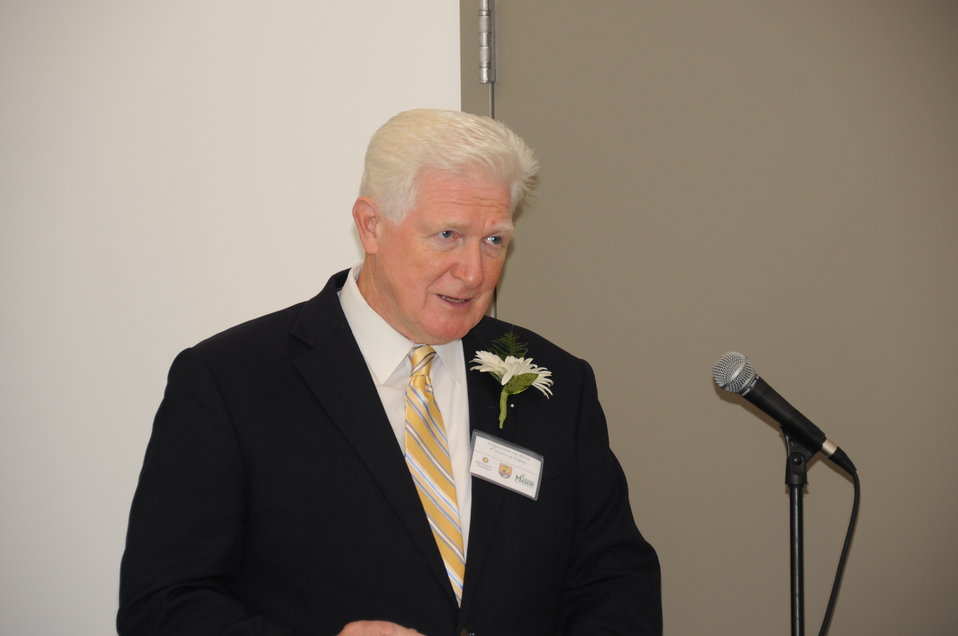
Together in Conservation

Memorandum of Understanding Signing Ceremony with U.S. Fish and Wildlife Service, Smithsonian Institution, and George Mason University. October 26, 2012